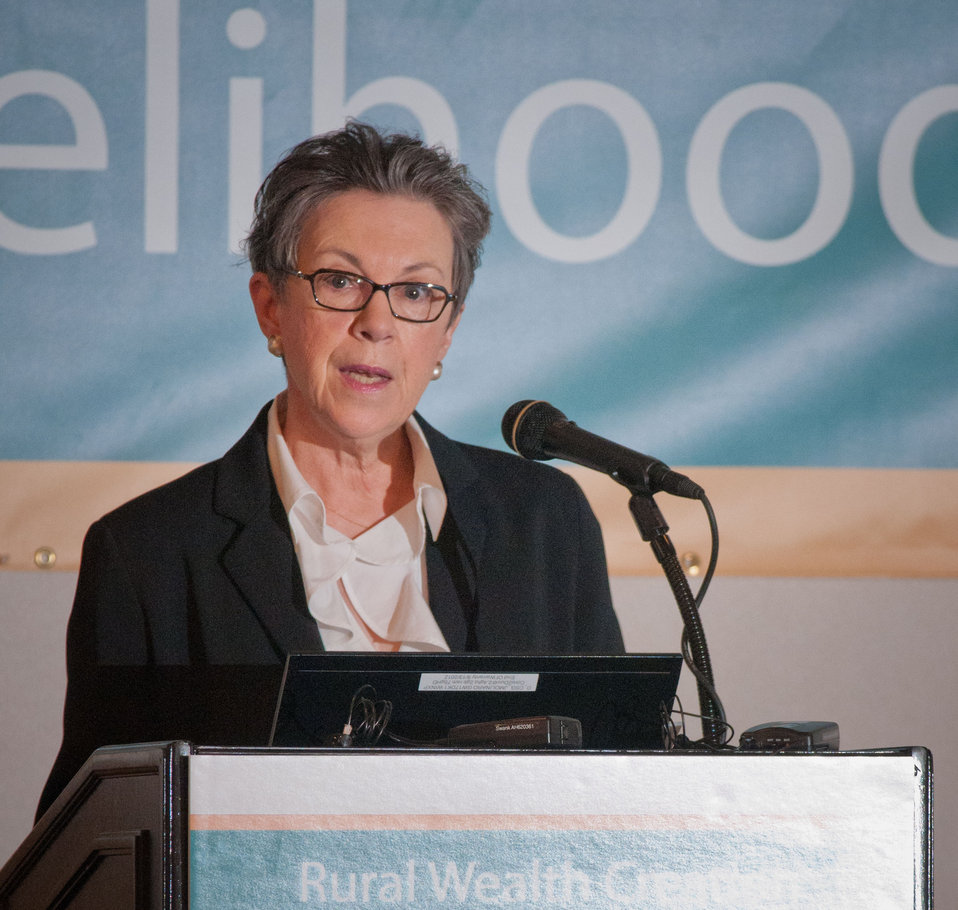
U.S. Department of Agriculture (USDA) Under Secretary for Research, Education and Economics, Dr. Catherine Woteki provided opening remarks for the Rural Wealth Creation and Livelihoods national conference for practitioners, researchers and policymakers, held at the Dupont Hotel, Washington DC, on Monday October 3, 2011. USDA partnered with the Ford Foundation to sponsor the conference.